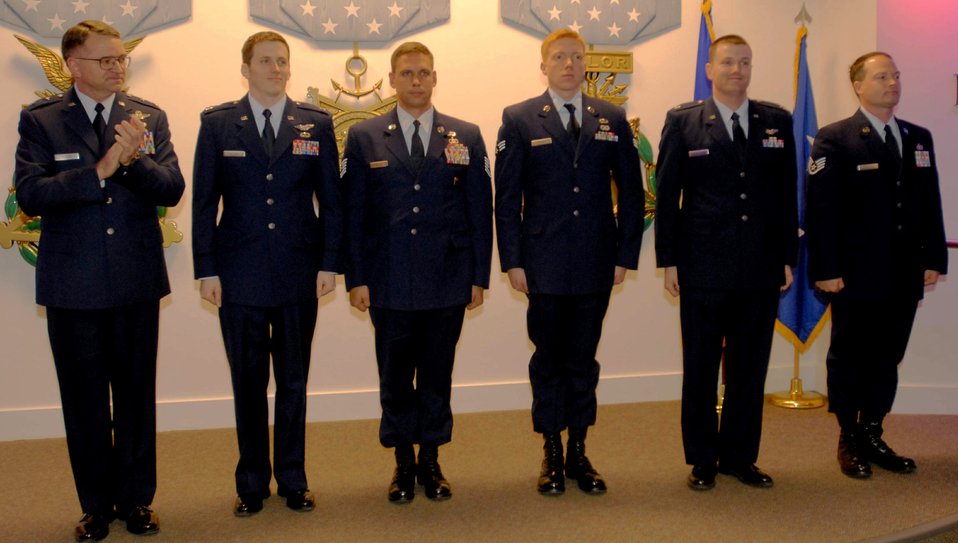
Special operators honored at Pentagon ceremony

Maj. Gen. Marke Gibson applauds five special operations Airmen who received awards at the Hall of Heroes in the Pentagon Feb. 24. The honorees are (left to right): Capt. Christopher G. Wilson, Tech. Sgt. John C. DeMaso, Senior Airman Alexander W. Royal, Capt. Brett E. Plummer and Staff Sgt. Justin M. Cremer. They were each awarded a plaque and are authorized to wear the Air Force Recognition Ribbon. General Gibson is the Air Force director of operations.